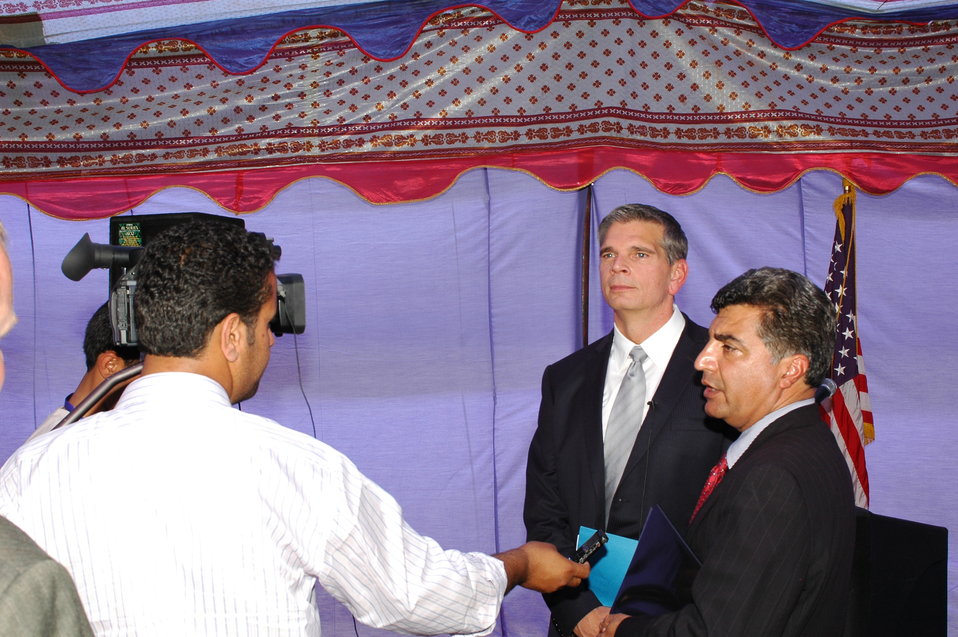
105 MW Tarakhil Power Plant Handover